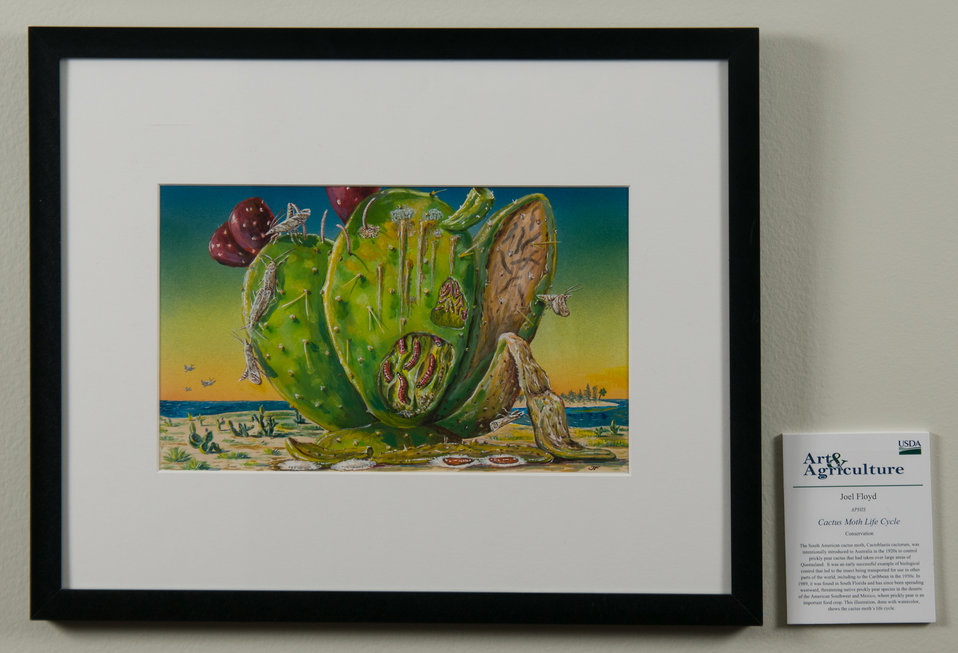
Online Viewer's Choice entries of the 2013 Art & Agriculture, Tuesday, July 9, 2013, in the South Building, Washington, D.C. Themes were expressed by employees from across the department and the contest was open to full-time and part-time USDA employees. Winning artwork will be displayed till the end of the year. U.S. Artistic expression is a creative outlet that is vital for an individual to grow and develop.